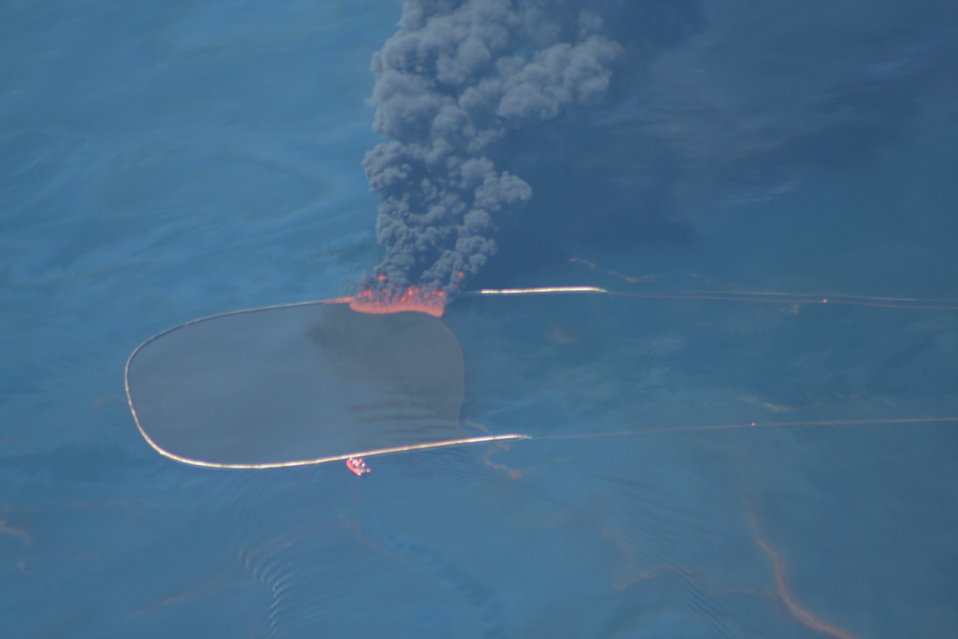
May 6 Open Water Oil Burn

May 6, 2010 - Open-water oil burn

Photo taken from U.S. EPA's Airborne Spectralphotometric Environmental Collection Technology (ASPECT) aircraft.